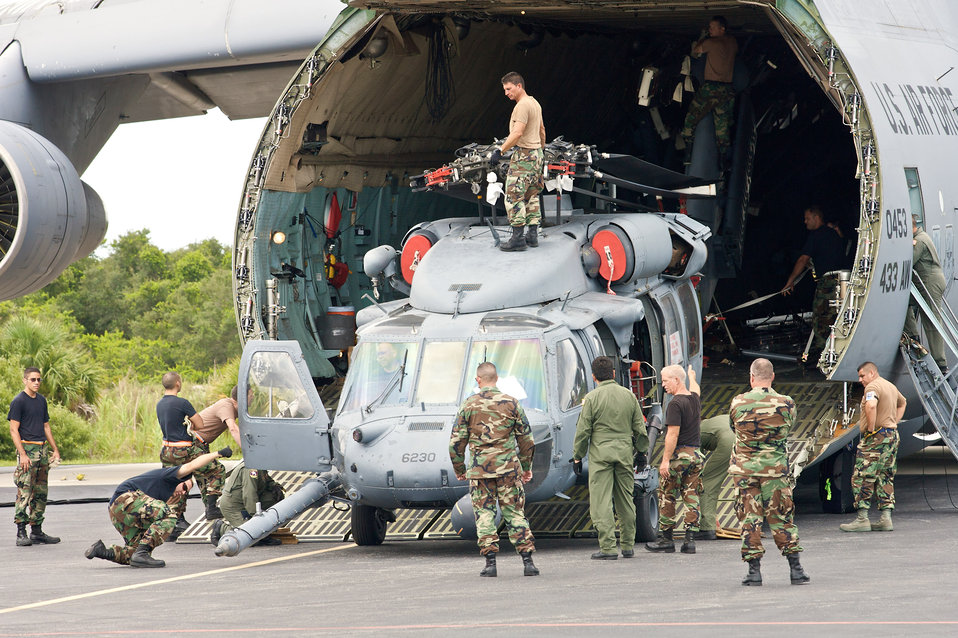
No worries, it will fit

Air Force Reservists load an HH-60G Pave Hawk helicopter onto a C-5 Galaxy at Cape Canaveral Air Force Station, Fla. The Airmen are from the 920th Rescue Wing at Patrick Air Force Base, Fla.